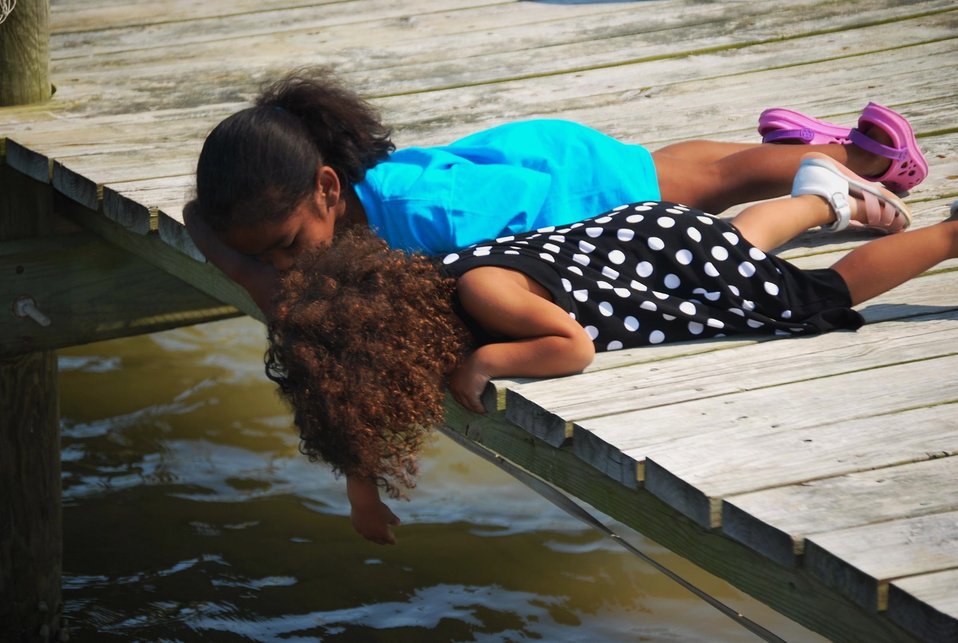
Young ladies exploring the bay from a pier.